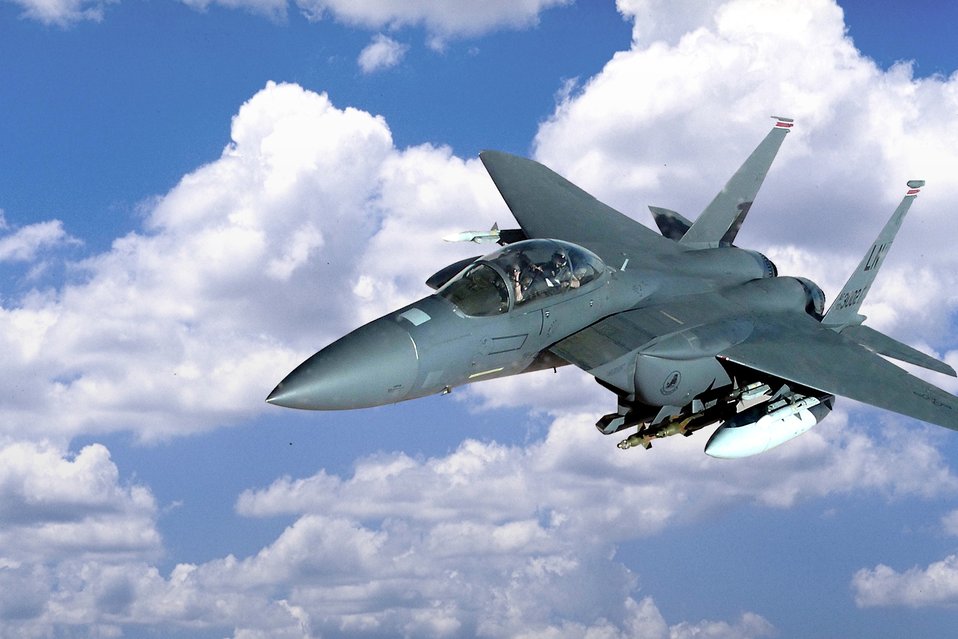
F-15E with Sniper AT pod

A F-15E Strike Eagle carries the Sniper pod as it flies during a mission in support of Operation Enduring Freedom. The Sniper pod is an advanced targeting pod with a multi-sensor system that increases the aircraft's self-targeting capability.